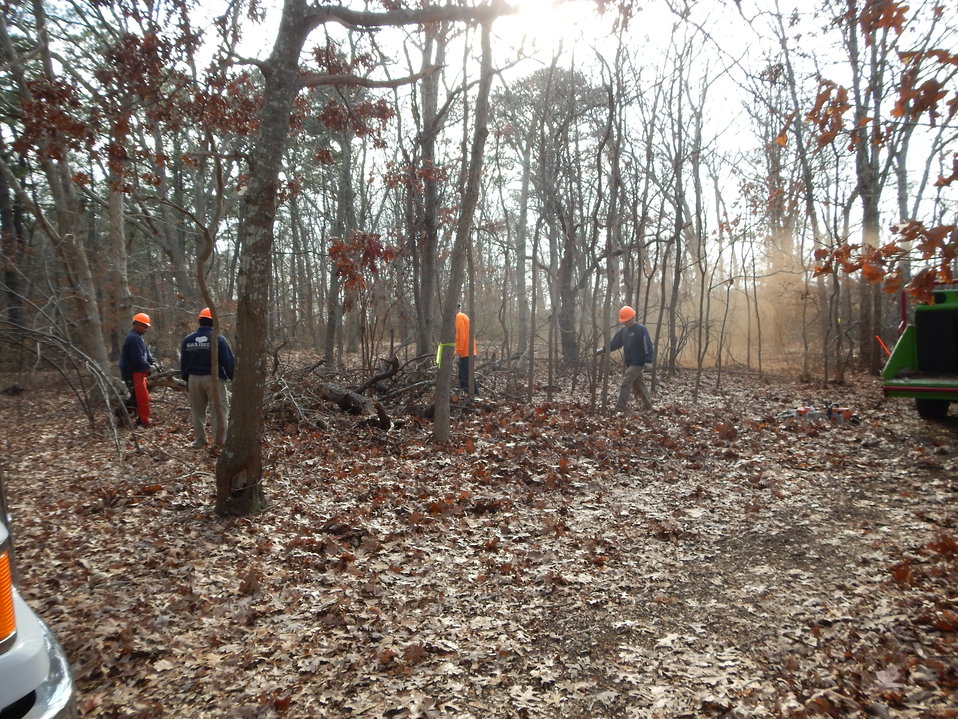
Tree removal at Wertheim National Wildlife Refuge

Clean-up of Hurricane Sandy damage.